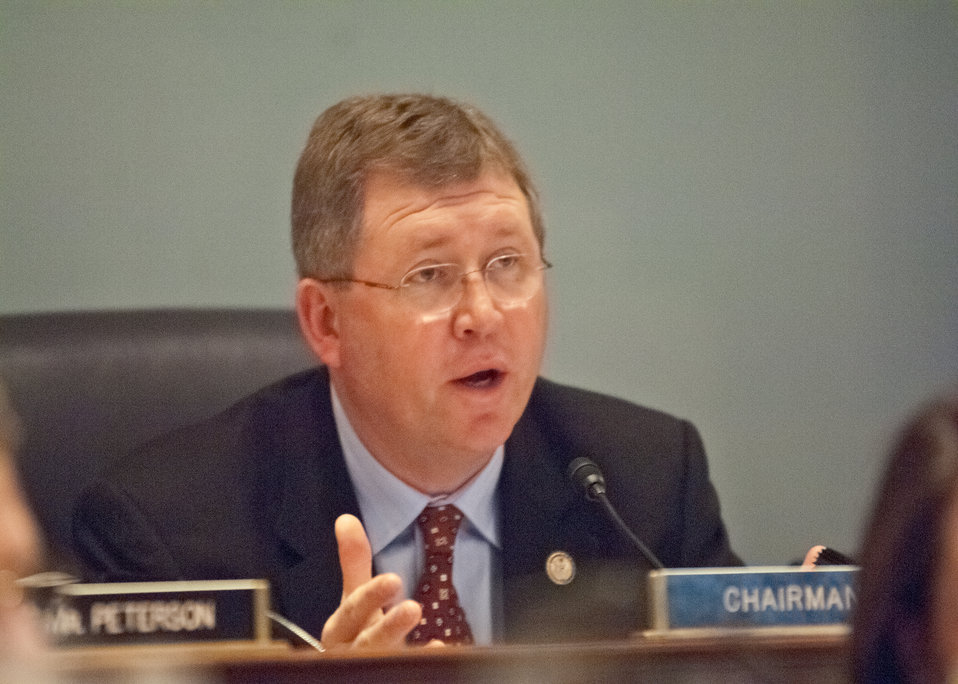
Rep. Frank Lucas, Oklahoma, Chairman of the House Agriculture Committee presented the committees statement before Agriculture Secretary Tom Vilsack testified on the “State of the Ag Economy” at a House Agriculture Committee Hearing in the Longworth House Office Building in Washington, D.C., Thursday, February 17, 2011.